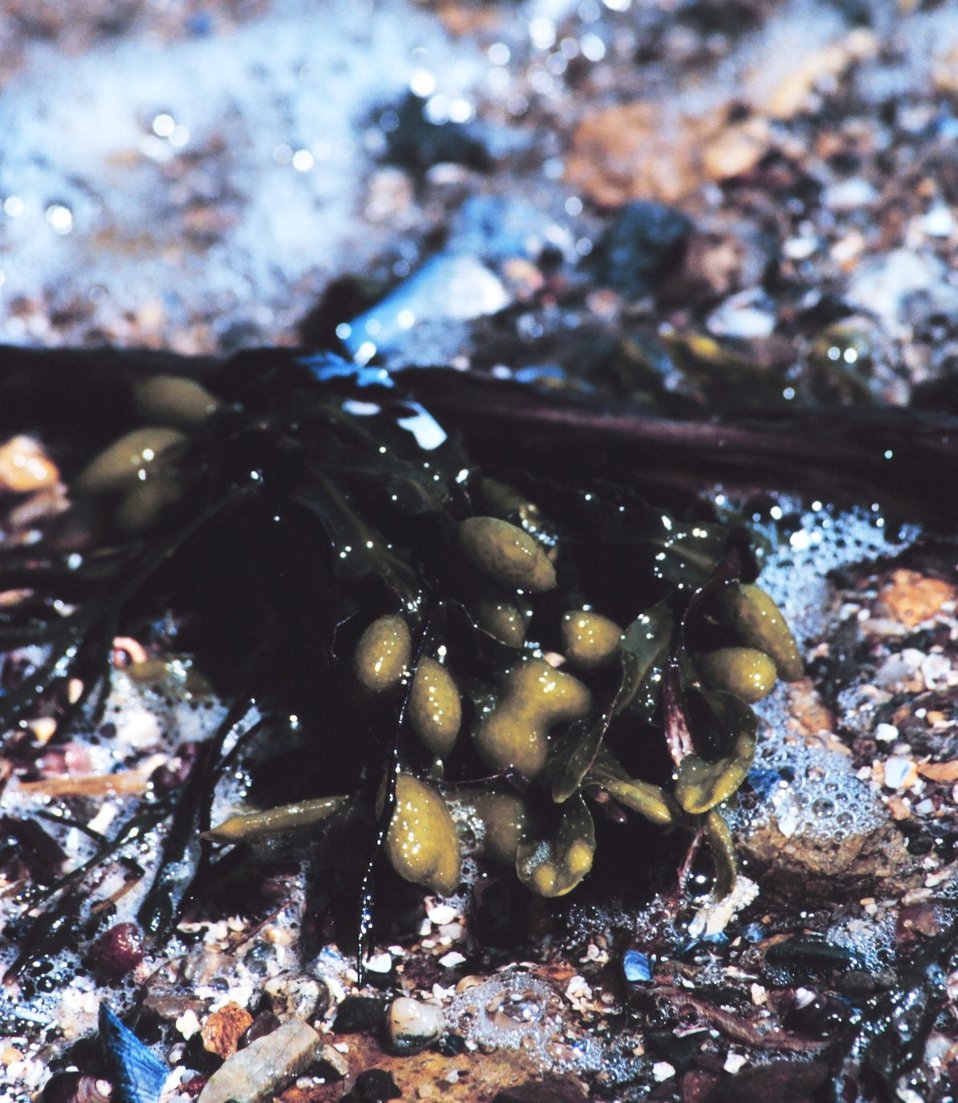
Seaweed, foam, and a rocky beach